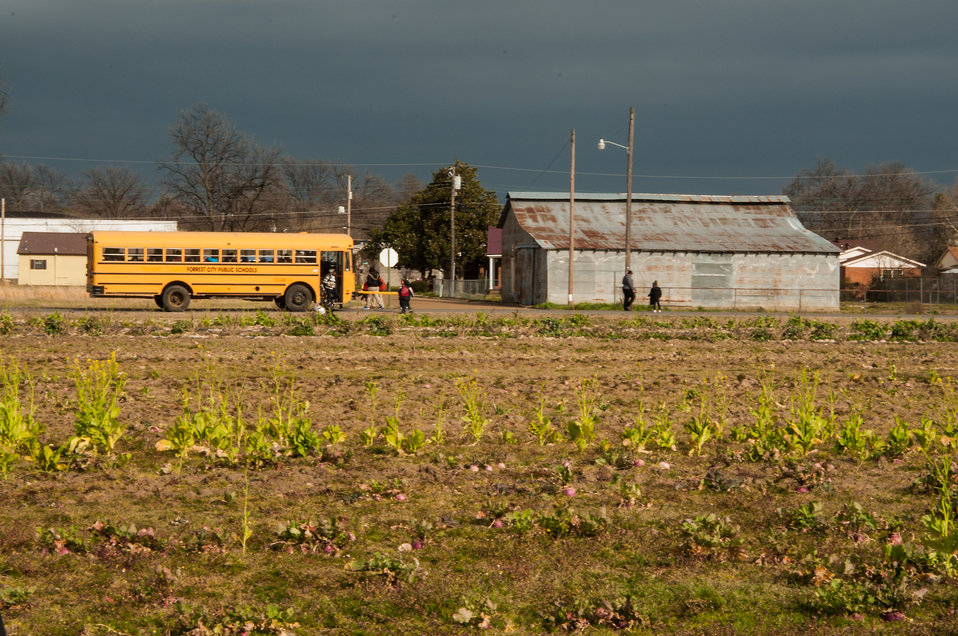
A school bus makes its rounds in rural area surrounding Forest City, AR on Mar. 4, 2013. The U.S. Department of Agriculture (USDA) in partnership with Heifer International (an International organization whose mission is to work with communities to end hunger and poverty and care for the Earth) and various for-profit and non-profit organizations have organized the Seeds of Change Implementation Plan to use sustainable agriculture to build food systems in the Arkansas Delta. The program has evolved into the Arkansas Delta Seeds of Change (ADSOC) Initiative. The East Arkansas Enterprise Community, Inc. in Forrest City, AR is one of 42 community-based organizations located in high poverty areas in the U.S. to benefit from ADSOC Initiative.